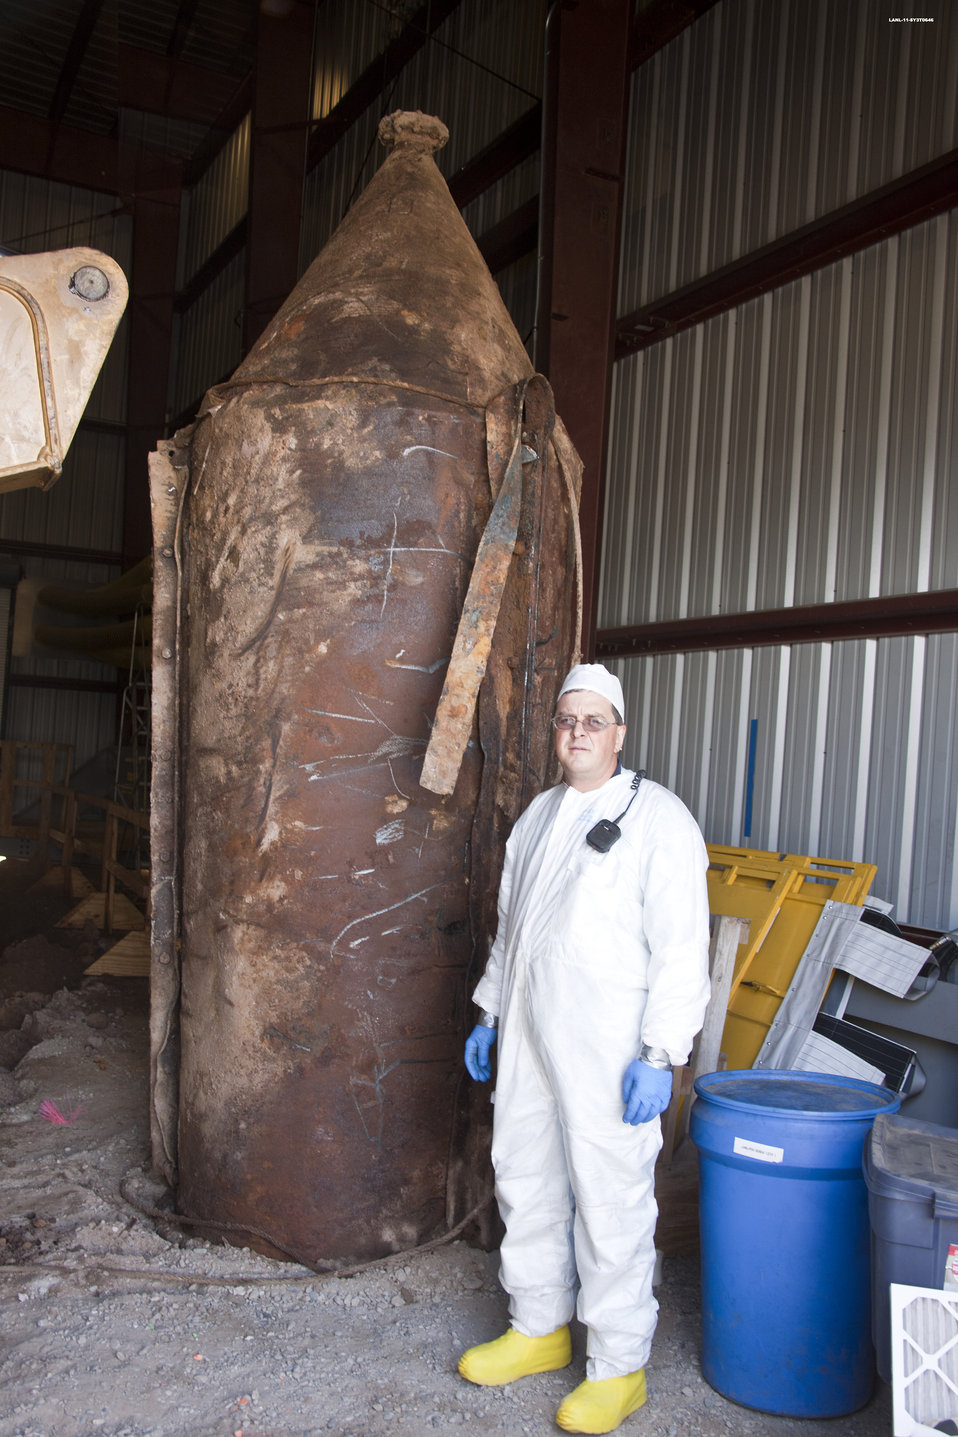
Los Alamos Dig Unveils Items Ranging from Military Trucks to Toothbrush

A 13-foot mixing tank was buried at the site.

In a $110 million Recovery Act project at Los Alamos National Laboratory, workers are excavating a waste disposal site known as Material Disposal Area B (MDA-B). Completion of the MDA-B cleanup will reduce EM’s legacy footprint by more than 260,000 square feet.